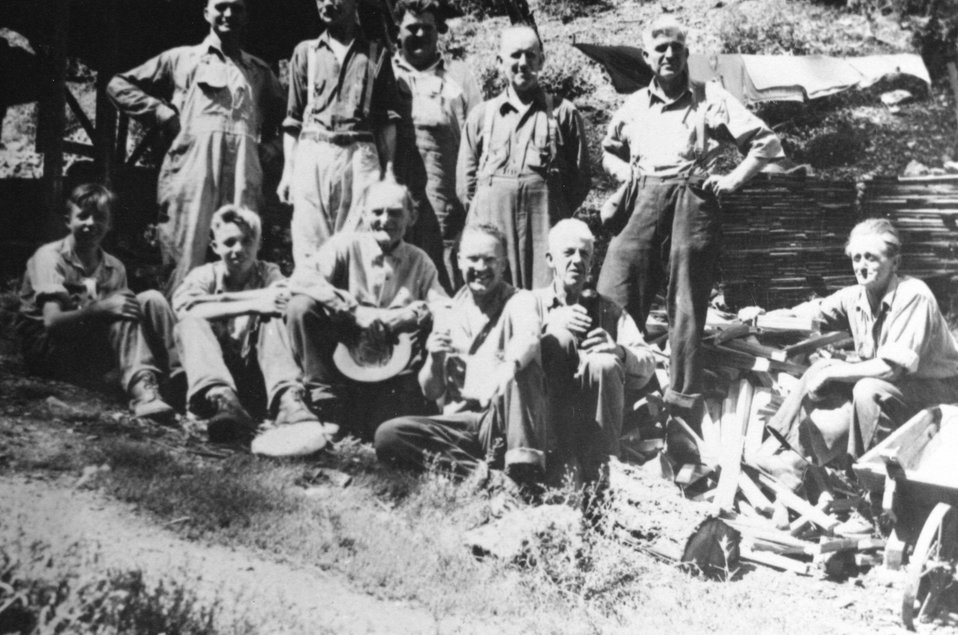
Mule Creek Miners C. 1935